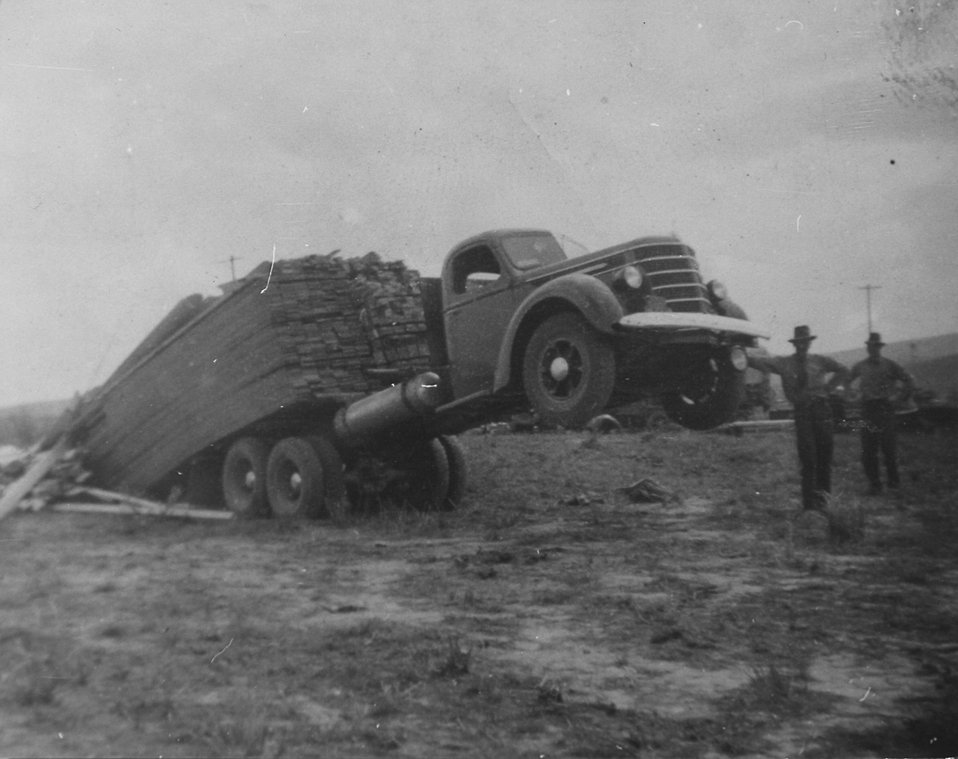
Unloading lumber. This is the way it was done in the CCCs Gap Ranch camp. circa 1940 Photograph Joe Uranek